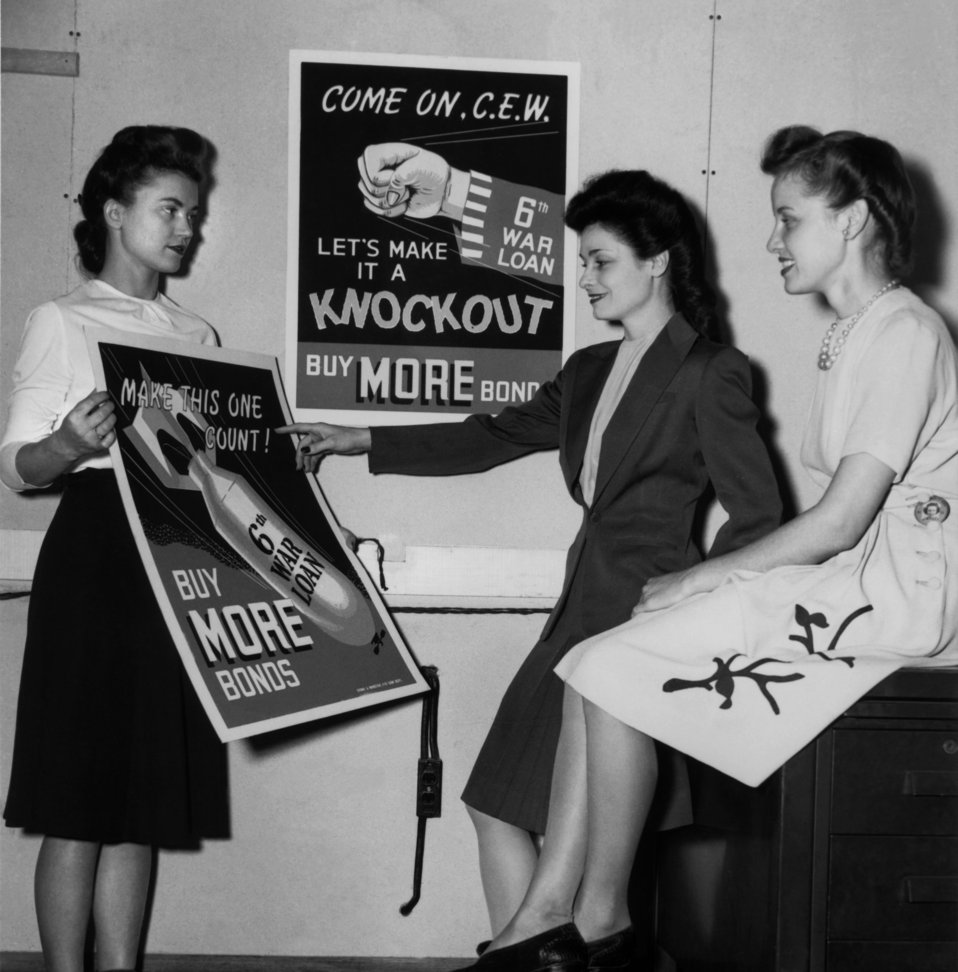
War Loan Drive 6th Oak Ridge

PRO137-2 DOE photo by Ed Westcott
War loan drive 6th Oak Ridge Tennessee 11/16/44